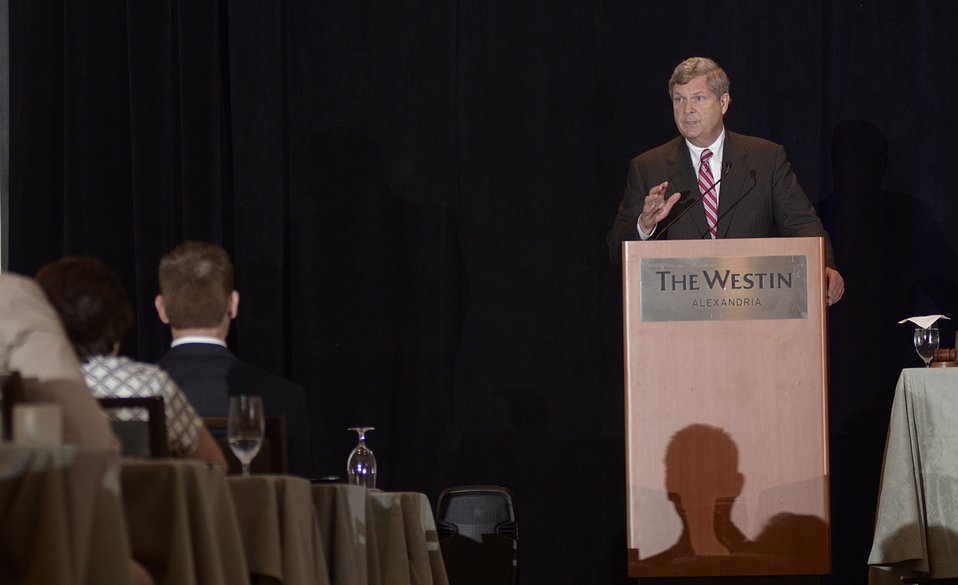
Agriculture Secretary Tom Vilsack presents keynote remarks at the U.S. Agricultural Export Development Council (USAEDC) Attaché Seminar, at the Westin Alexandria, in Alexandria, VA, on Wednesday, July 10, 2013. USAEDC is a non-profit private sector trade association that provides an exchange and coordination of information to promote the export of the products of U.S. agriculture. Their membership includes U.S. commodity trade associations, farmer cooperatives and state regional trade groups from around the country. In the interest of U.S. agricultural growers and producers their export promotion efforts, work in conjunction with the U.S. Department of Agriculture Foreign Agricultural Service.